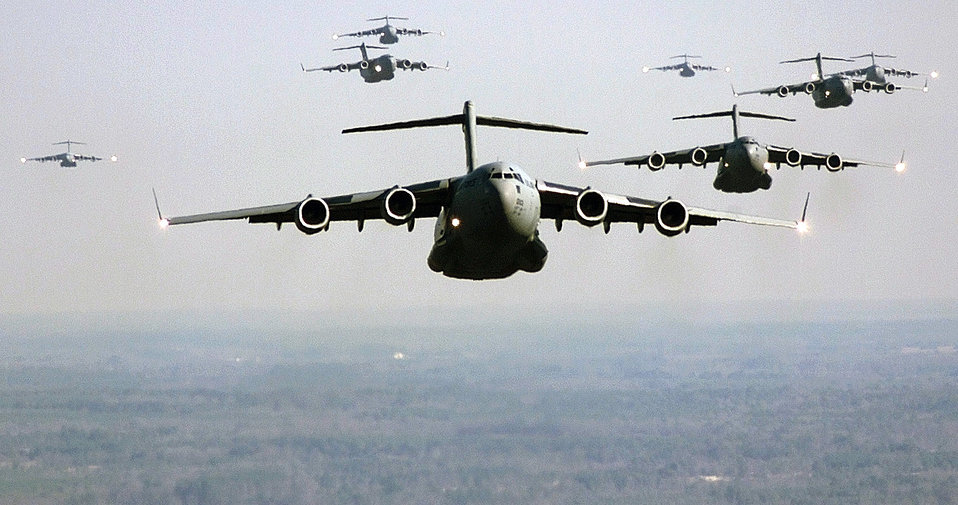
Follow me

OVER NORTH FIELD, S.C. -- A C-17 Globemaster III from Charleston AFB, S.C., leads a formation Jan. 12, 2000. The C-17 is part of a nine-ship formation flying a training mission that includes an air drop, a short field landing and aerial refueling.